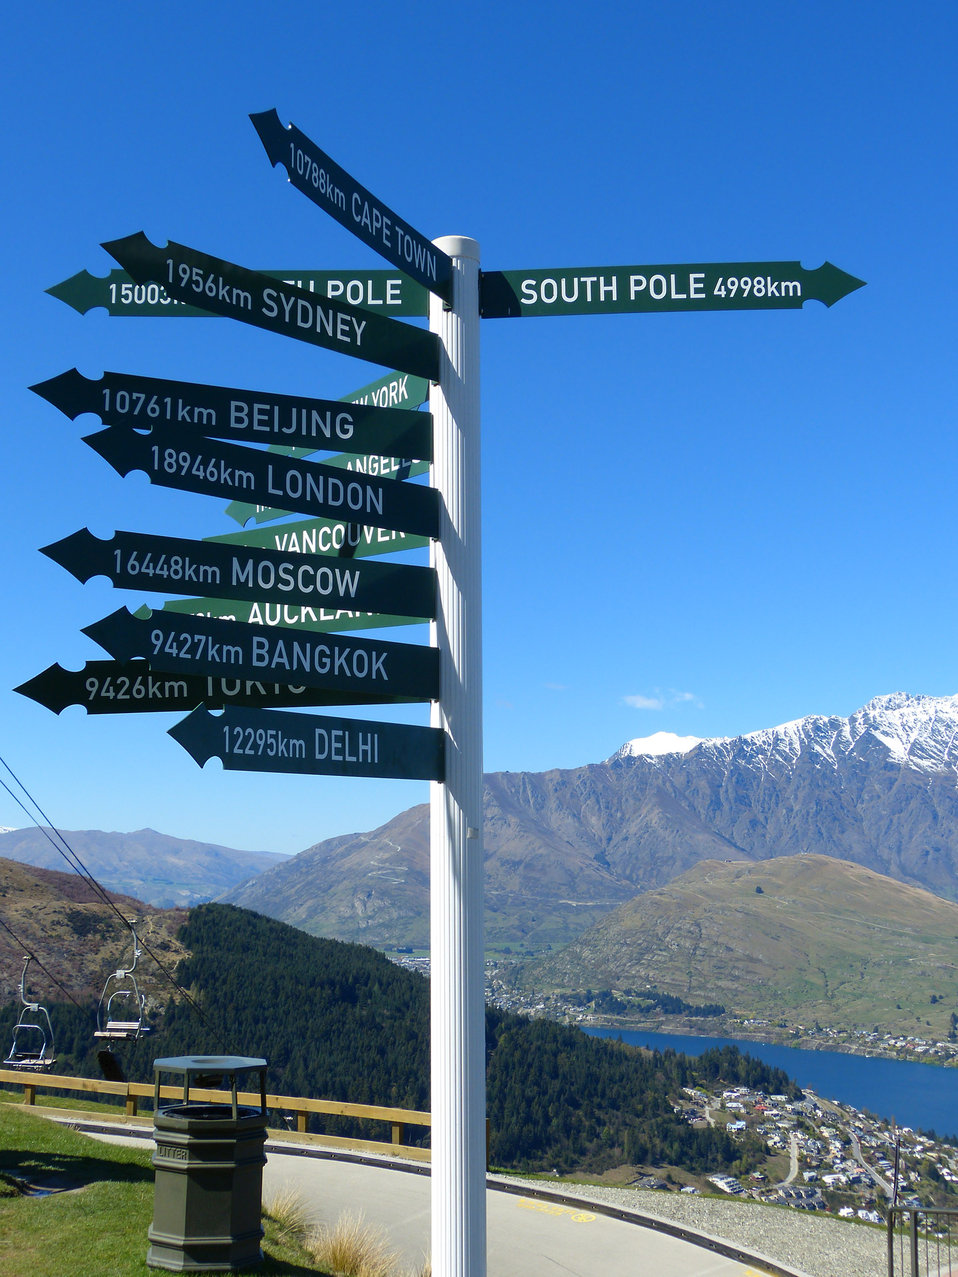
Pointer

Directory in queenstown.